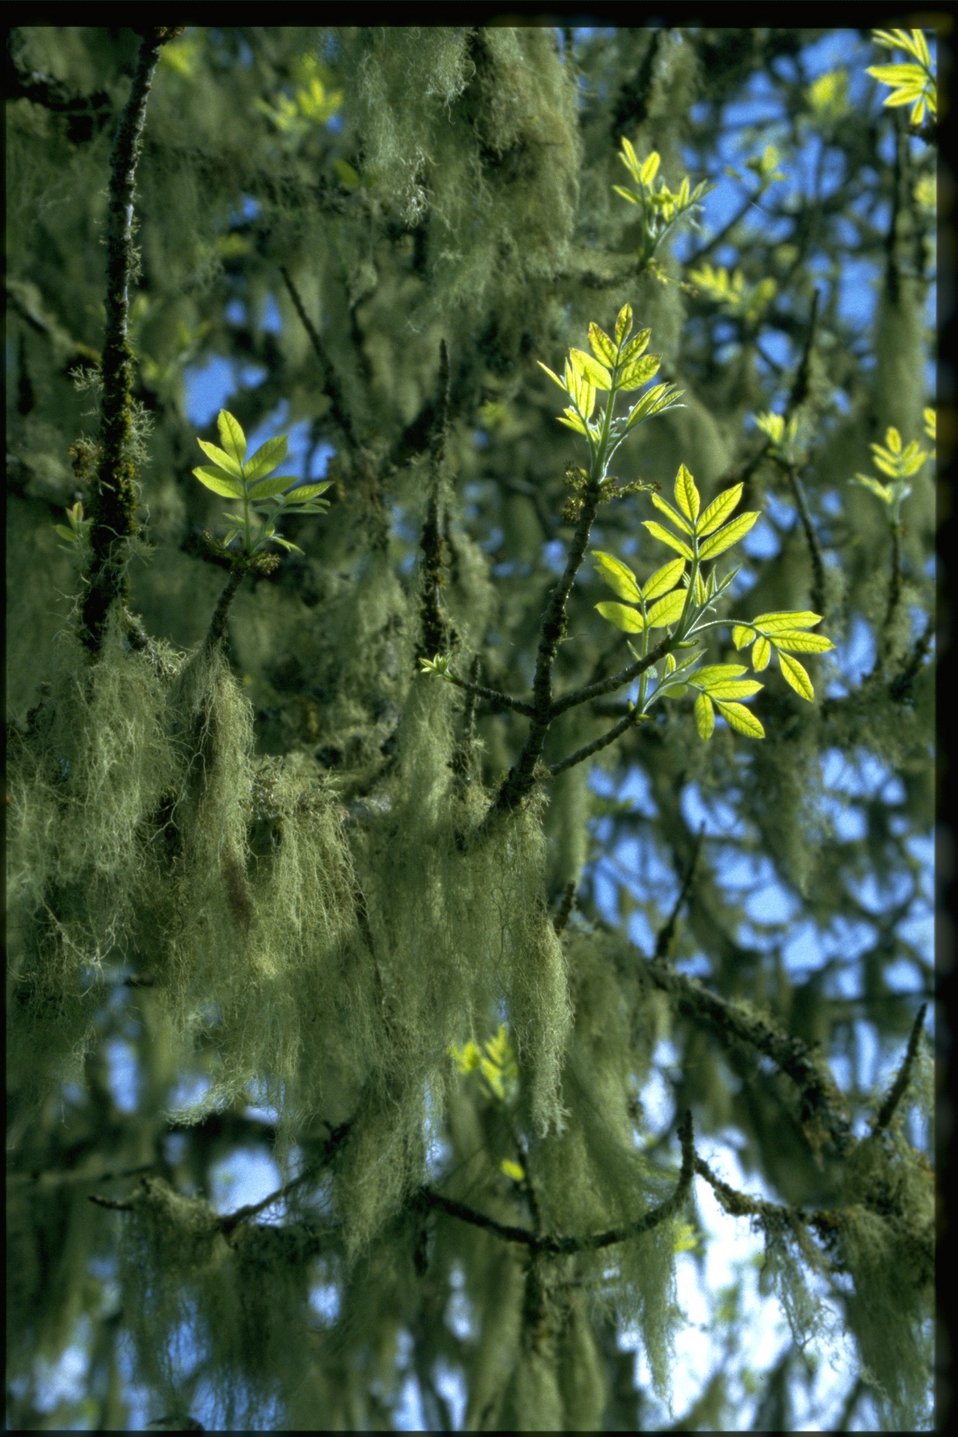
Farshot of Fraxinus latifolia and Alectoria lichen.